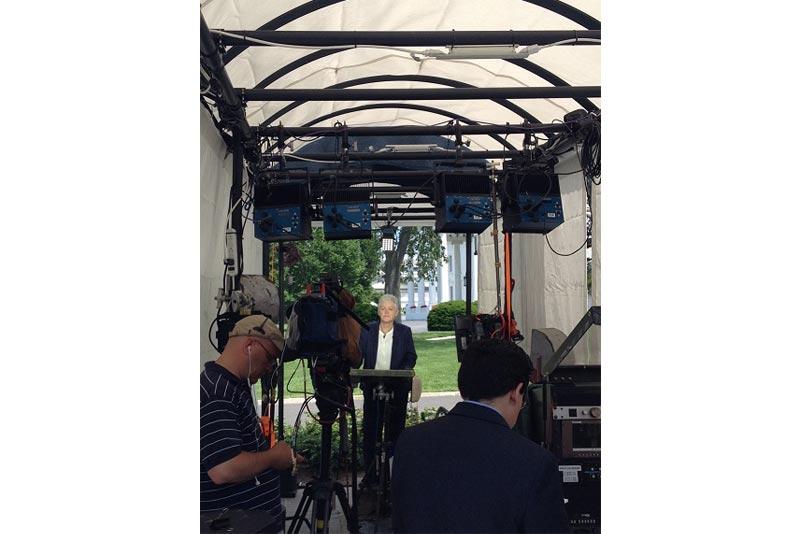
Day in the Life - June 2, 2014

2:48 pm - From North Lawn of the White House, following a conference call with President Obama hosted by the American Lung Association. (13/15)